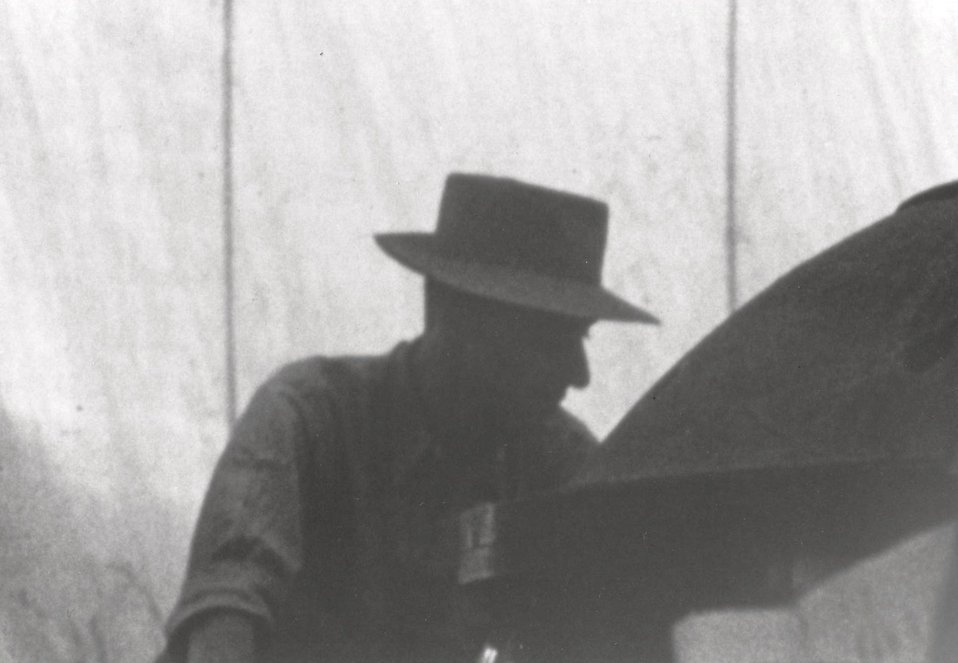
R. OPPENHEIMER OVERSEAS FINAL ASSEMBLY OF THE GADGET